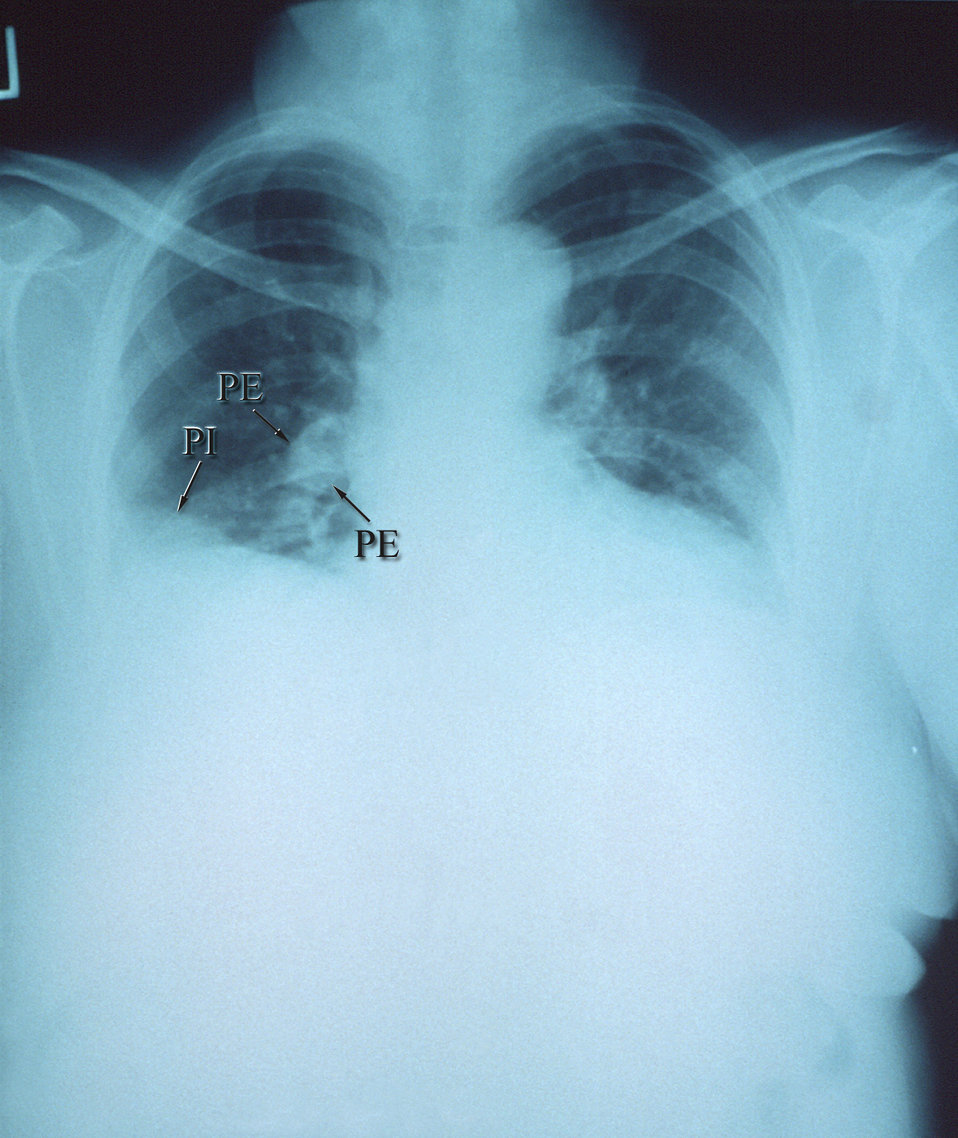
This AP chest x-ray revealed a right pulmonary arterial embolism (PE) and a pulmonary infarct (PI) distal to the blockage.